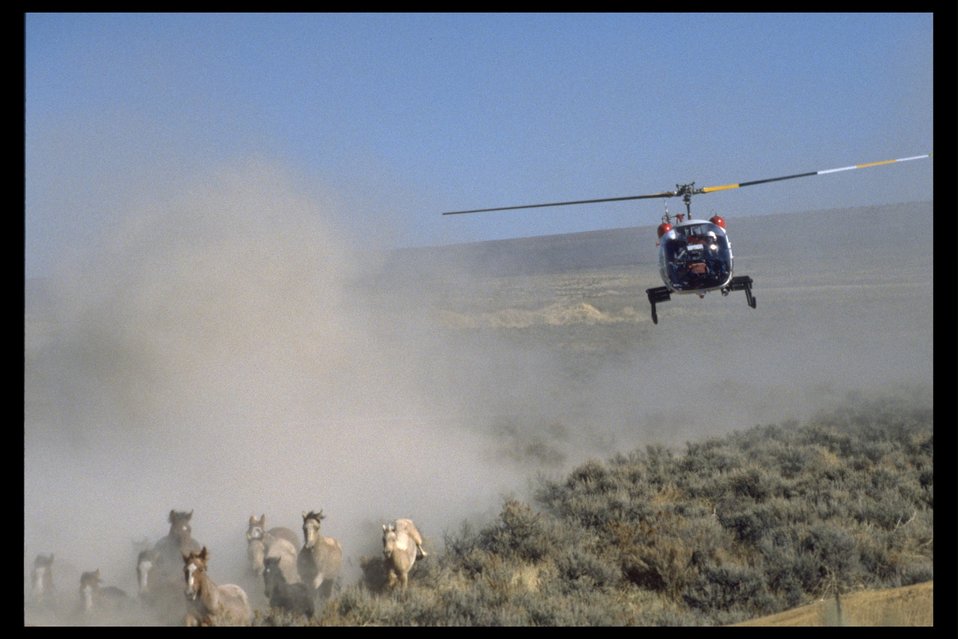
Helicopter driving South Steens wild horses into a trap.